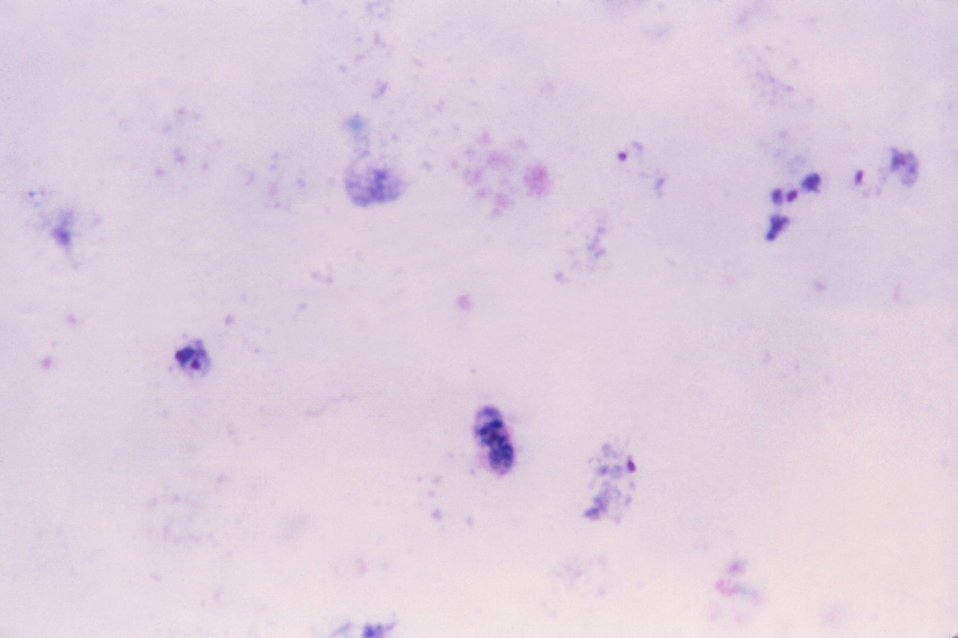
This thick film Giemsa stained micrograph revealed a mixed P. falciparum and P. vivax parasitic infection.